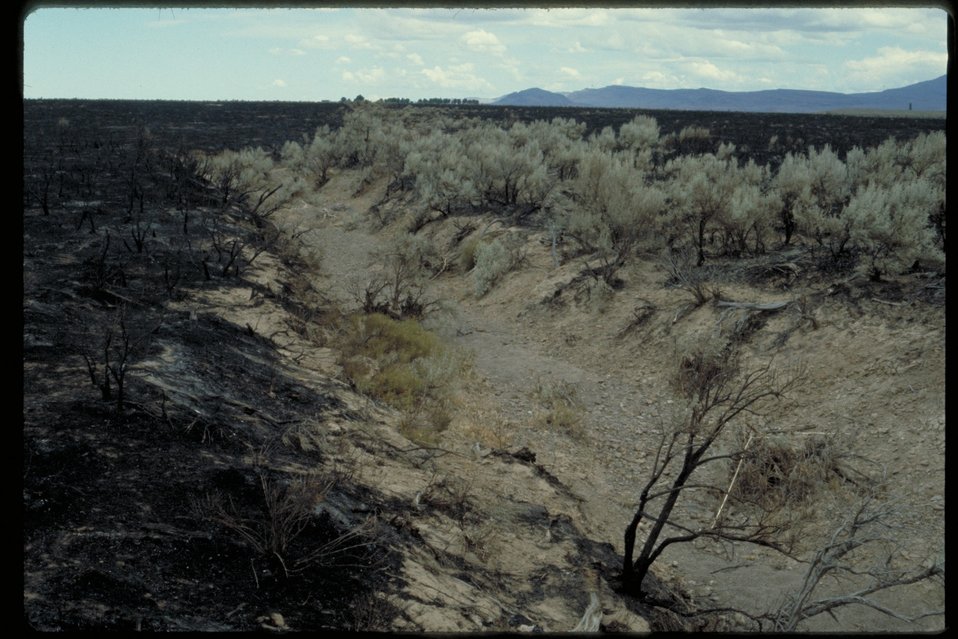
Oregon Trail Near Alkali Creek Lower Snake River District